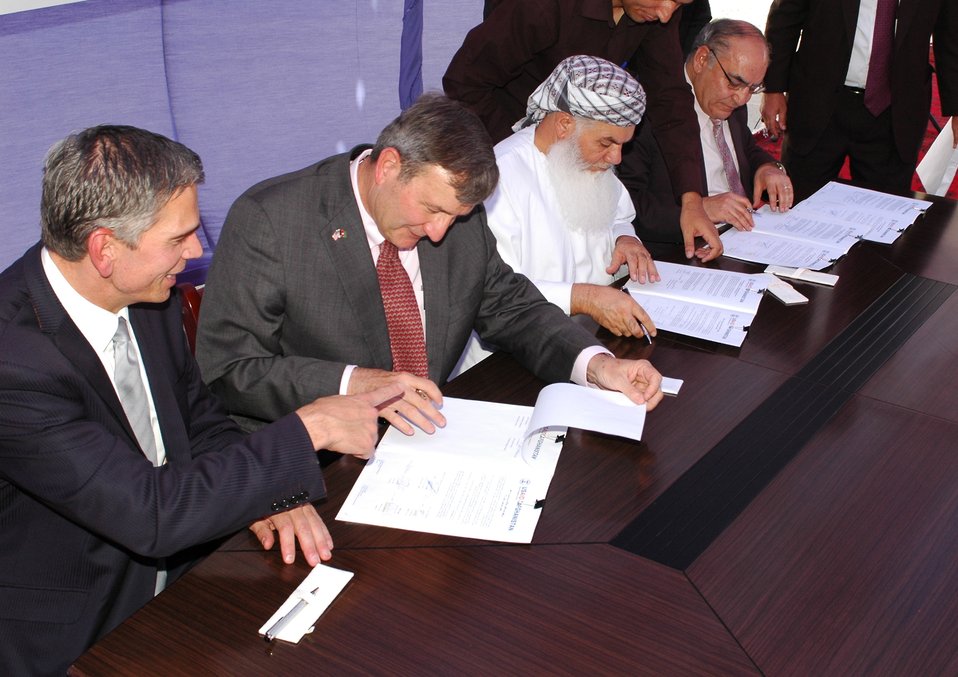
105 MW Tarakhil Power Plant Handover